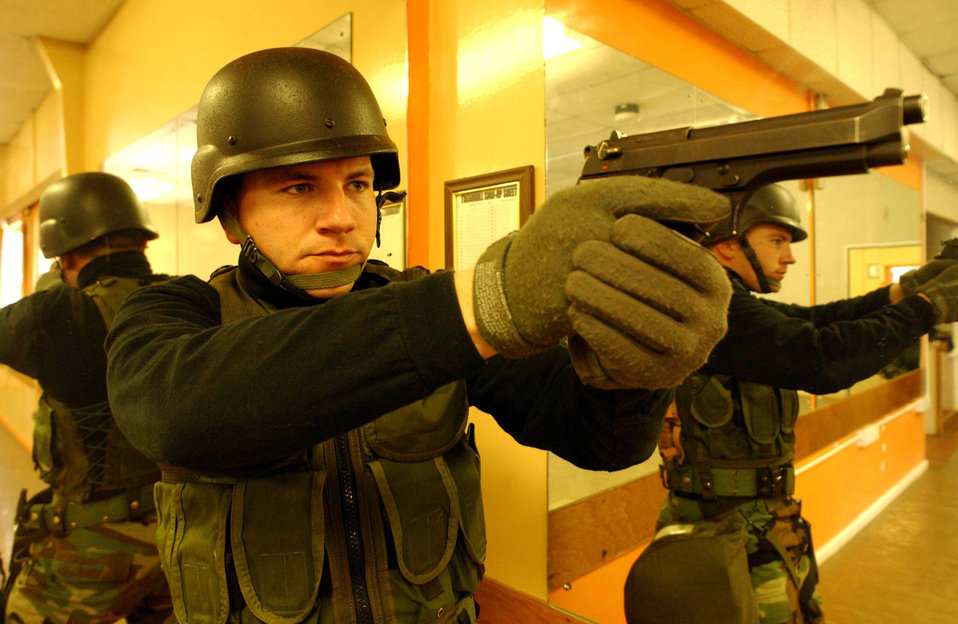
Taking aim

ROYAL AIR FORCE FAIRFORD, England -- Staff Sgt. Chris Cook aims a 9 mm pistol at a terrorist during a simulated hostage situation. The purpose of the exercise is to keep each member of the team proficient in their duties. More than 600 people and 14 KC-135 Stratotankers from the 100th Air Refueling Wing are temporarily operating here while reconstruction of the Royal Air Force Mildenhall runway takes place during the next six months. Sergeant Cook is a tactics team member assigned to the 100th Expeditionary Security Forces Squadron